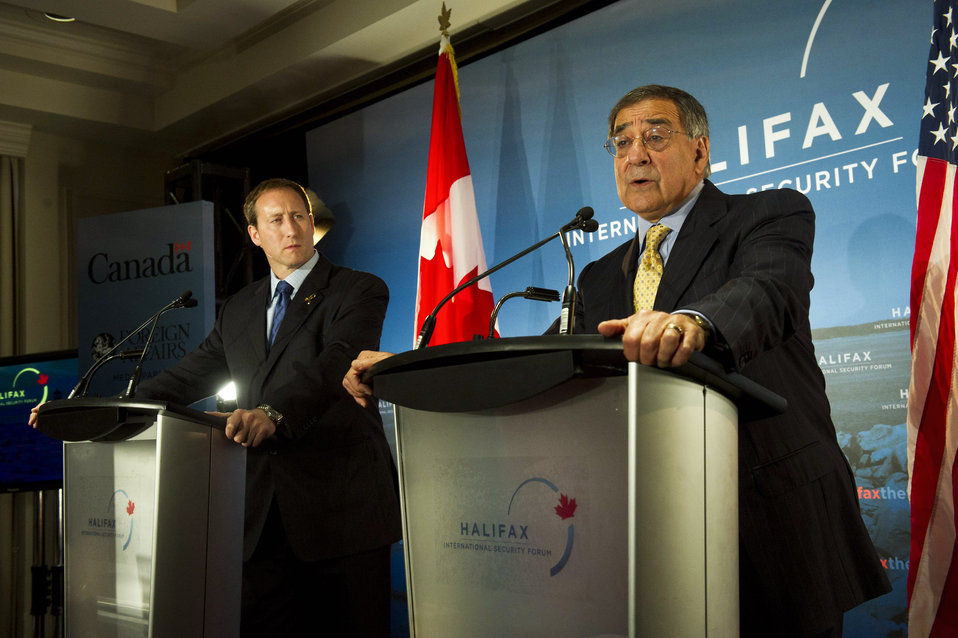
U.S., Canadian defense leaders call F-35 crucial

U.S. Defense Secretary Leon E. Panetta (right) and Canadian Defense Minister Peter MacKay hold a press conference to open the Halifax International Security Forum in Halifax, Nova Scotia, Nov. 18, 2011. Panetta and MacKay fielded questions regarding possible U.S. budget cuts to the F-35 strike fighter and its impending impact on Canada.